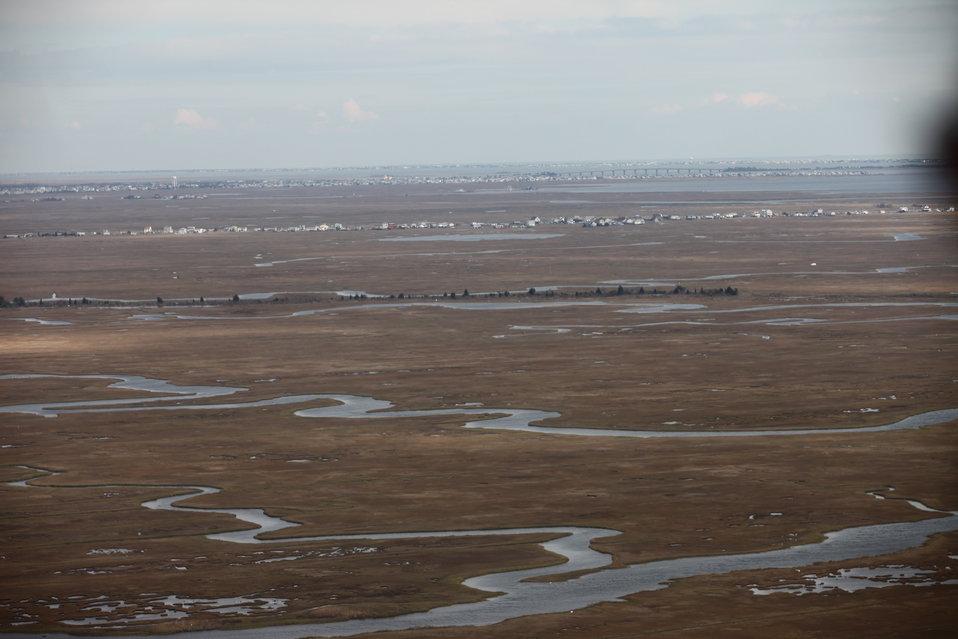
E.B. Forsythe National Wildlife Refuge (NJ)

View of the marsh on the north end of the refuge after Hurricane Sandy.